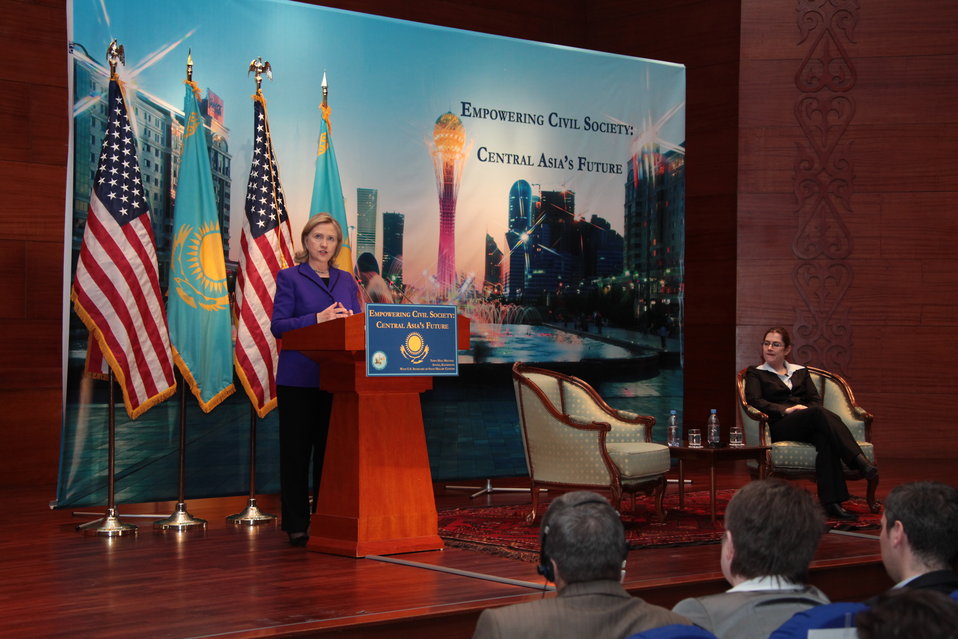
Secretary Clinton Responds to a Question

U.S. Secretary of State Hillary Rodham Clinton responds to a question at a town hall on “Empowering Civil Society for Central Asia’s Future” in Astana, Kazakhstan, on November 30, 2010.